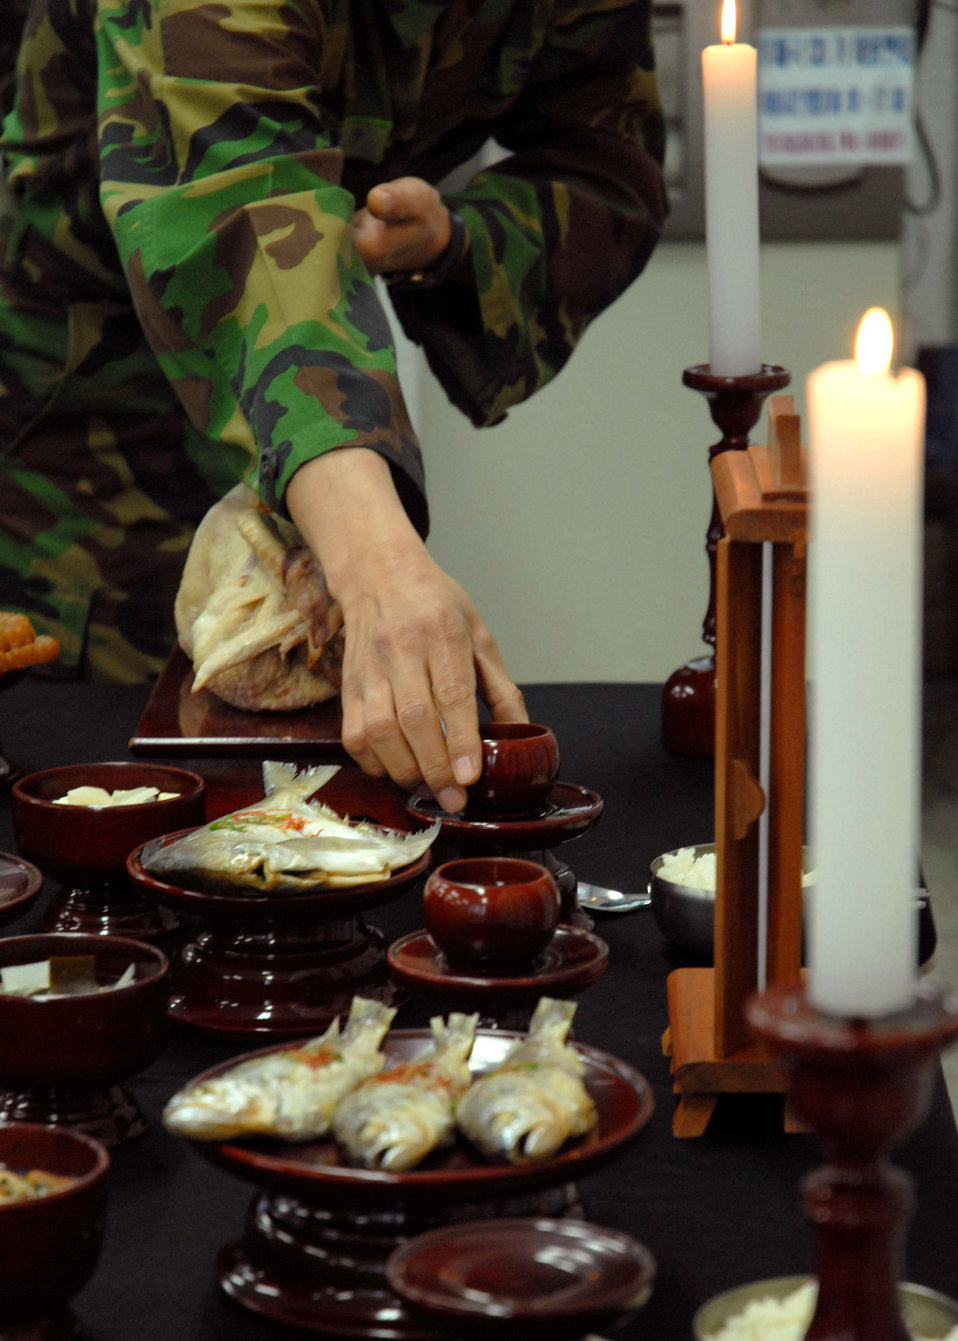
Lunar New Year event strengthens ties, cultural awareness

A member of the South Korean air force's 38th Fighter Group places a cup of tea on a ceremonial table Feb. 7 at Kunsan Air Base, South Korea. The 38th FG members invited Airmen from the 8th Fighter Wing to celebrate the Korean Lunar New Year. The Lunar New Year event is one of many events hosted by South Korean members in order to strengthen ties and gain cultural awareness with U.S. military members.